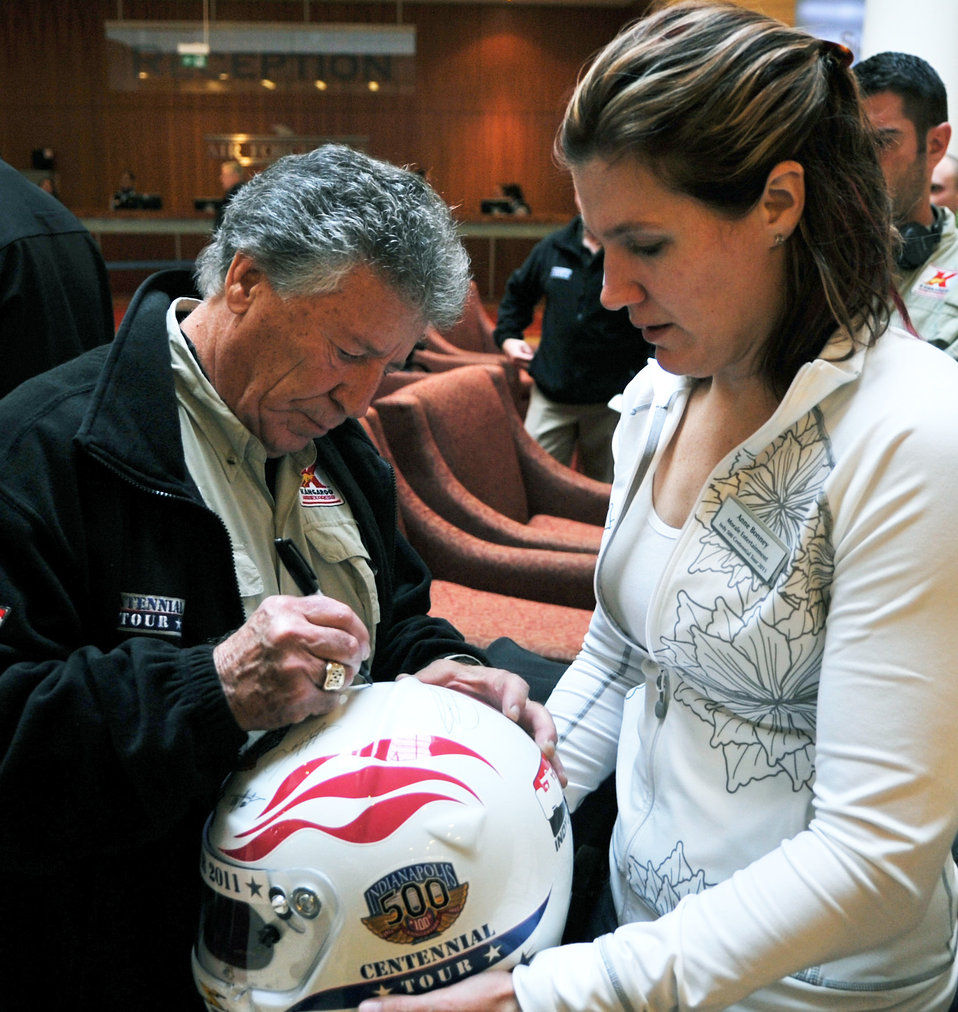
IndyCar drivers take pit stop at Ramstein

Mario Andretti, an Indy 500, Daytona 500, and Formula 1 champion, autographs a helmet during the Indy 500 Centennial Tour, Ramstein Air Base, Germany, Jan. 14, 2011. The Indy 500 Centennial tour brings Indy racing teams to Europe and the Middle East over a 10 day tour to honor and boost morale for service members and their families.